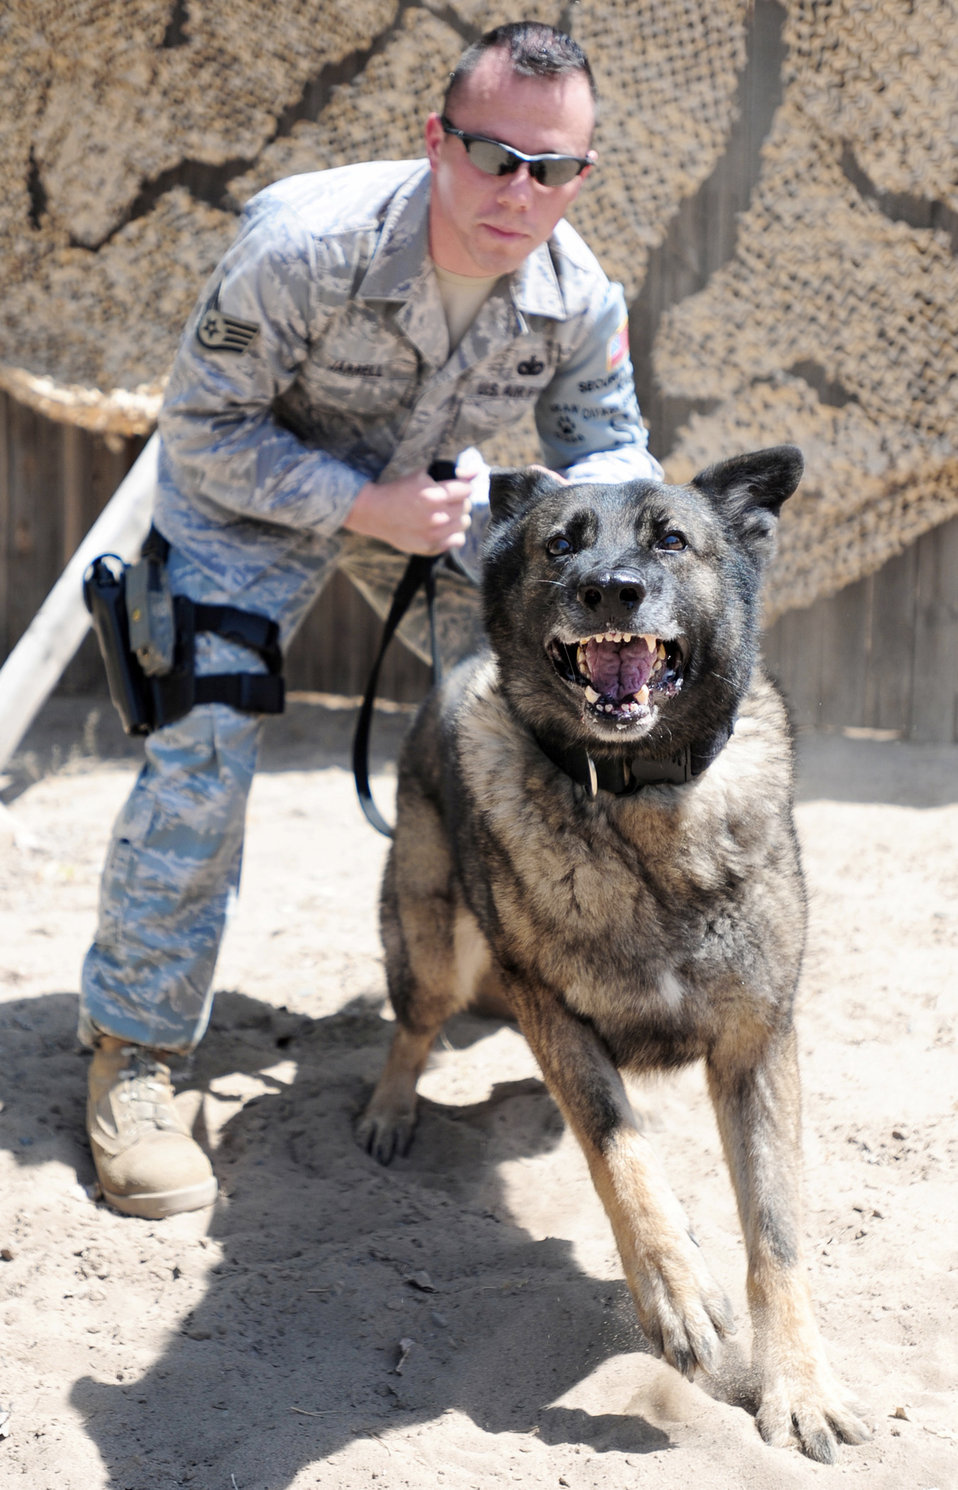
Don't mess with Uran

Staff Sgt. Christopher Jarrel keeps control of Uran at the Transit Center at Manas, Kyrgyzstan, recently. Sergeant Jarrel is a military working dog handler assigned to the 376th Expeditionary Security Forces Squadron. He and Uran complete sweeps of aircraft and vehicles for any suspicious items. They are deployed from the 19th Airlift Wing Security Forces Squadron at Little Rock Air Force Base, Ark.